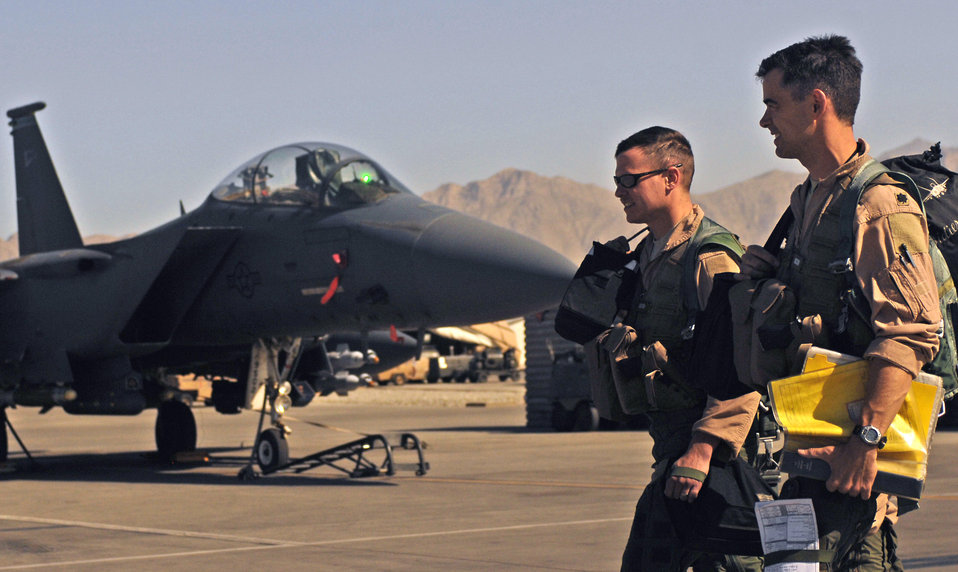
Wing surpasses combat hour milestone

Lt. Col. Christopher Didier (right), an F-15E pilot with the 336th Expeditionary Fighter Squadron at Bagram Airfield, Afghanistan, and Capt. Thomas Veilleuxwalk, an F-15E weapons system operator, leave the flightline after completing a close-air-support mission June 9. In May, aircrews from the 336th EFS and the 74th EFS, who fly A-10 Thunderbolt IIs, together logged a total of more than 5,000 combat flight hours over Afghanistan. The aircraft assigned here provide close-air support and airborne intelligence, surveillance and reconnaissance for American and coalition ground troops.